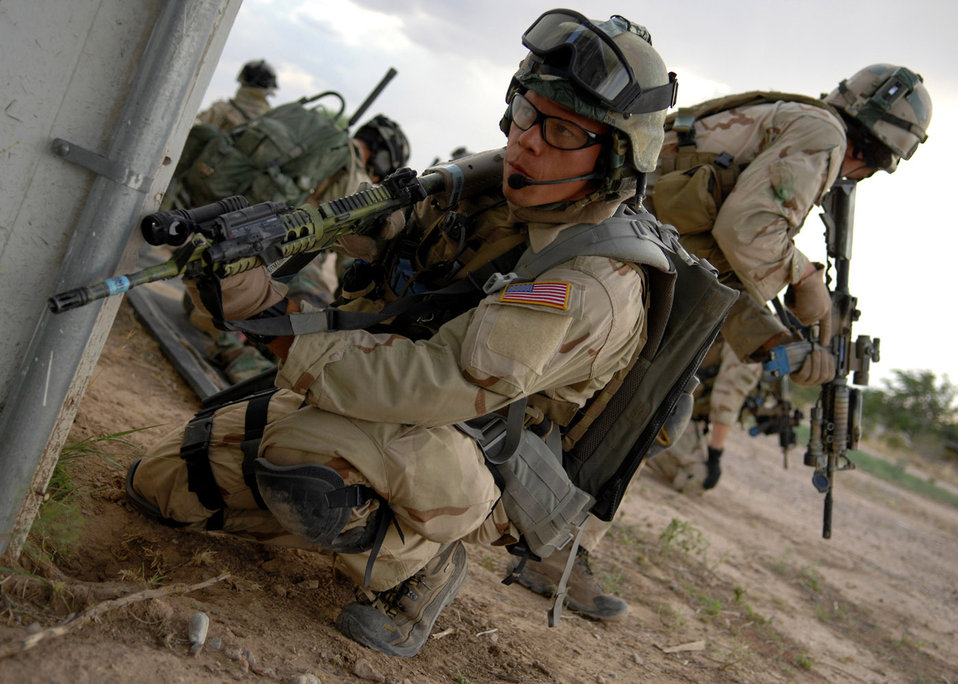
Angel Thunder 2007

Tech. Sgt. Kristopher Burridge maintains security during a training scenario July 13 at Playas, N.M., that is part of Exercise Angel Thunder 2007. Angel Thunder is a combat search and rescue task force exercise designed to test theater spin-up capabilities and examine the integration of all Air Force assets in mission planning procedures and mission execution. Sergeant Burridge is a pararescueman from the 38th Rescue Squadron at Moody Air Force Base, Ga.